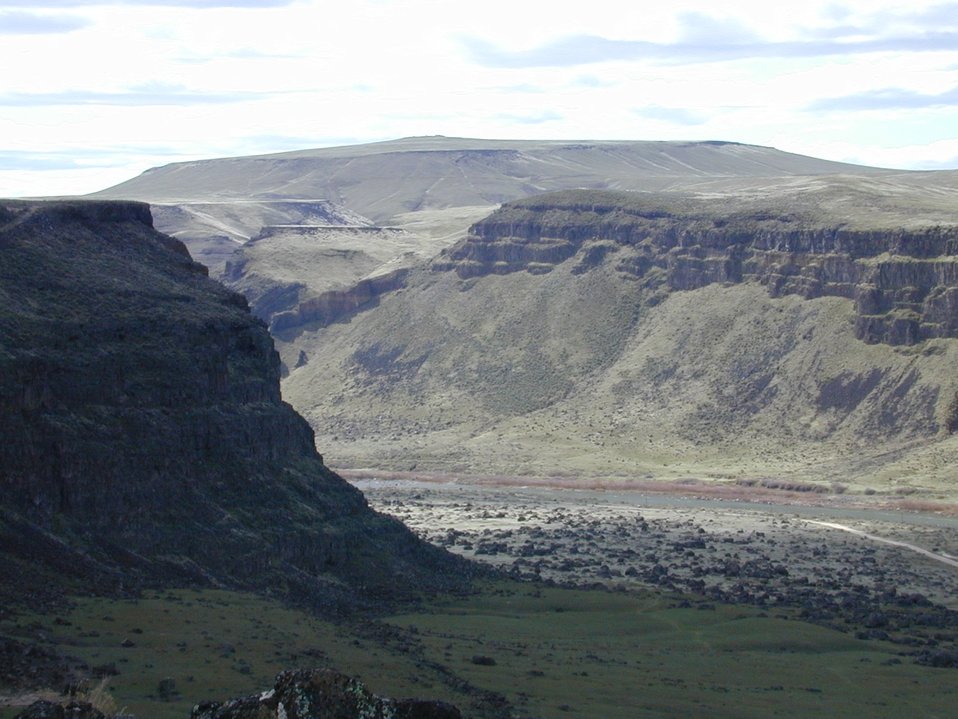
Snake River Canyon Snake River Birds of Prey National Conservation Area Lower Snake River District Scenic LSRD